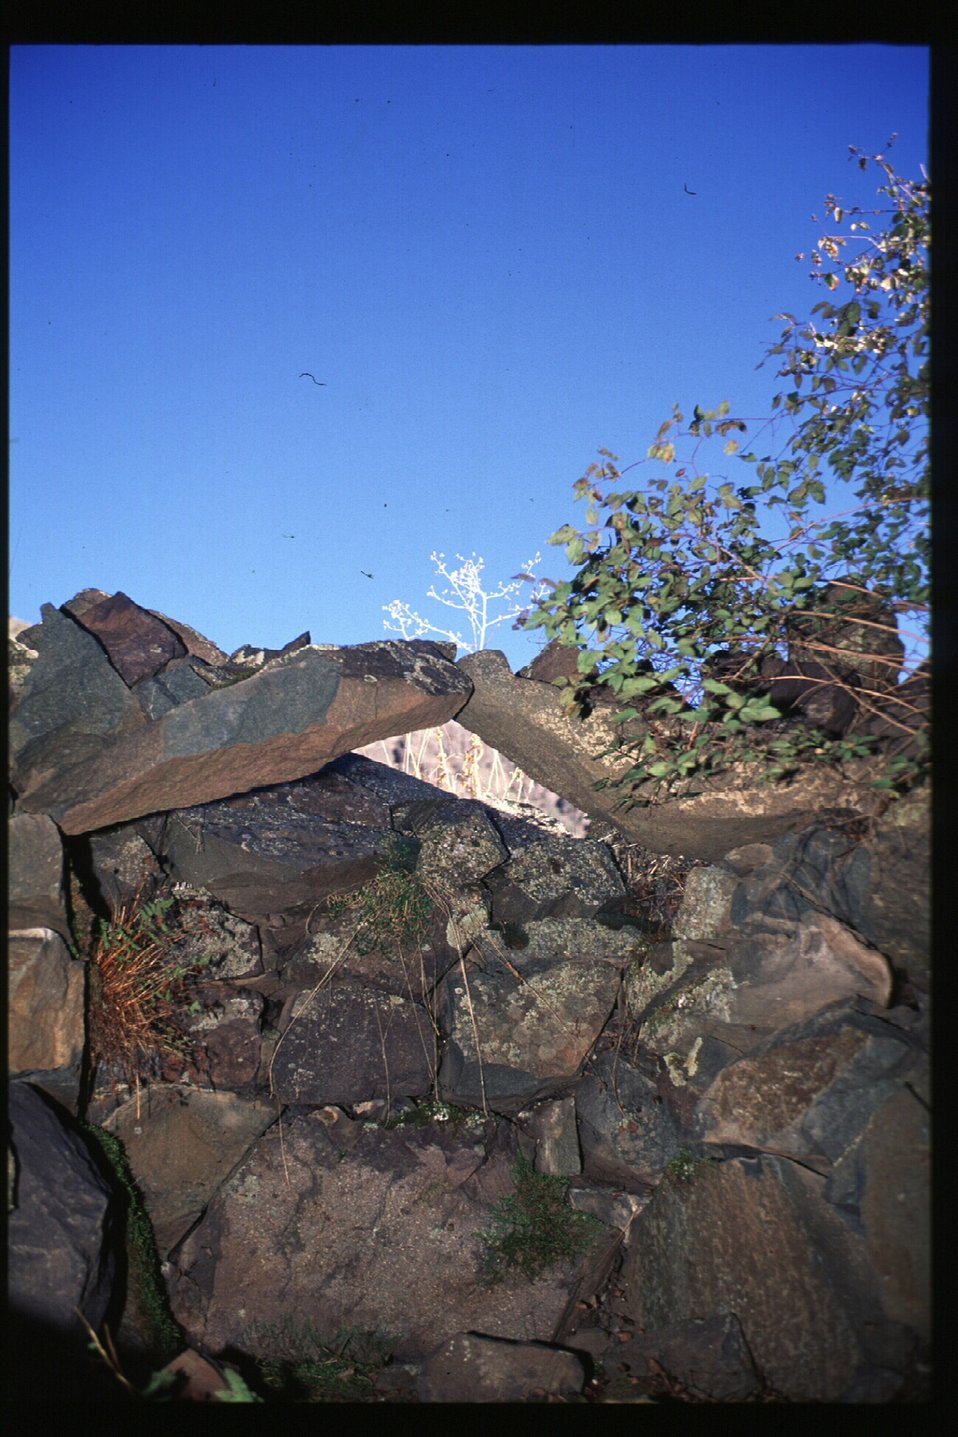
Historic cook hut possibly chinese Lower Salmon River Cottonwood Field Office UCSC Upper Columbia Salmon Clearwater District